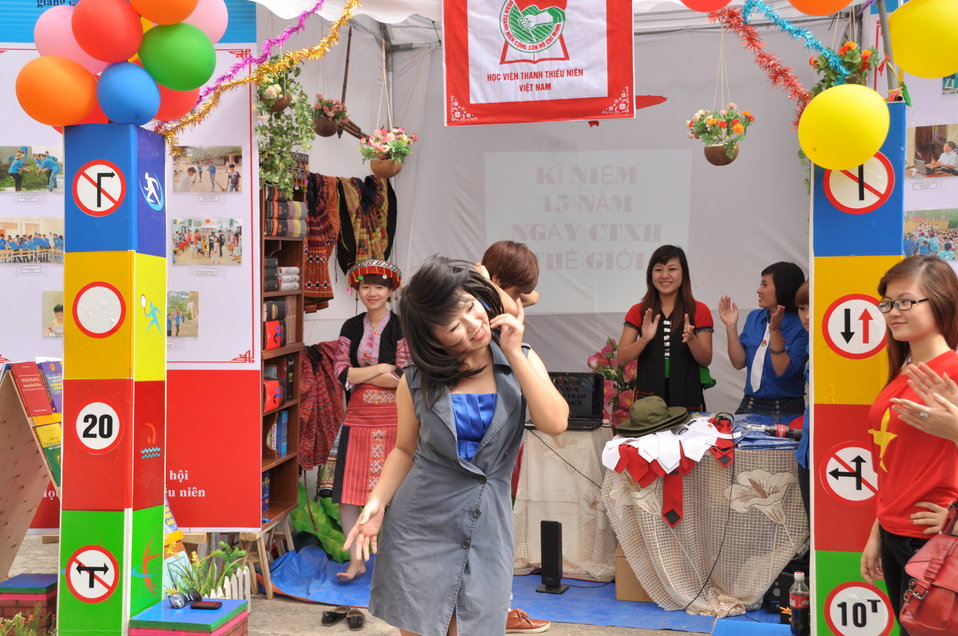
USAID Supports Social Work Education

Photo: @USAIDVietnam, November 9, 2012